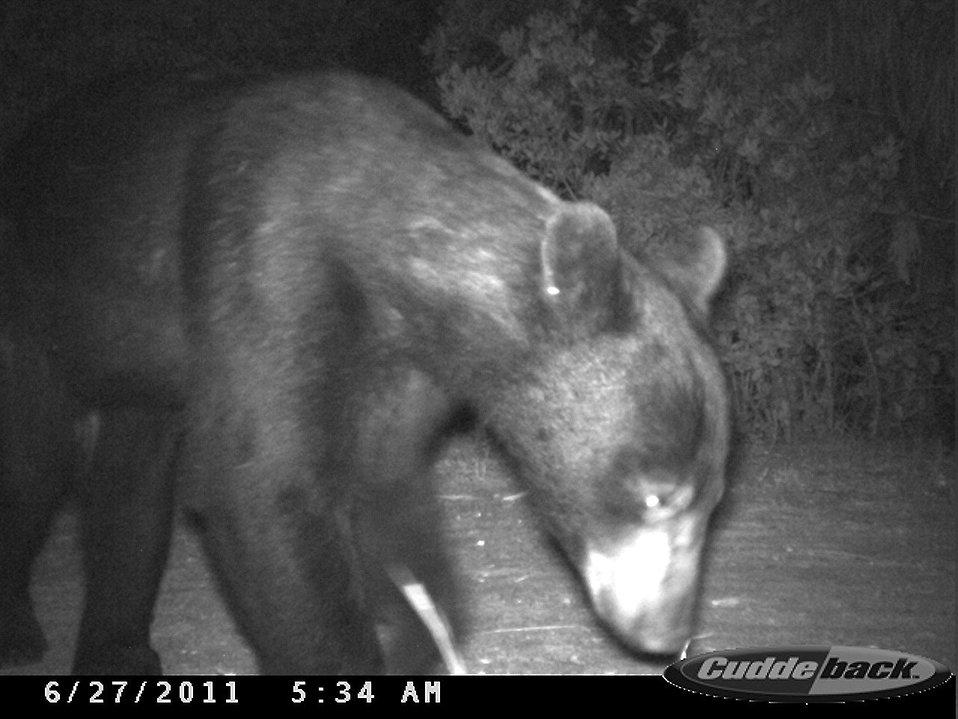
young black bear

J.N. Ding Darling National Wildlife Refuge, FL
Camera trap photo: USFWS